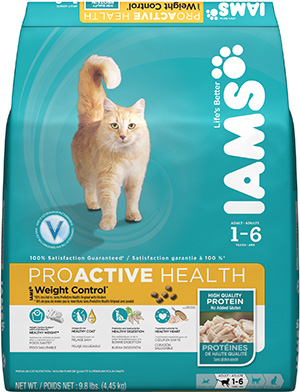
RECALLED – Dog and Cat foods - Dry

August 14, 2013 – Product Recall – P&G Voluntarily Recalls Limited Quantity of Dry Pet Food Due to Possible Health Risk.